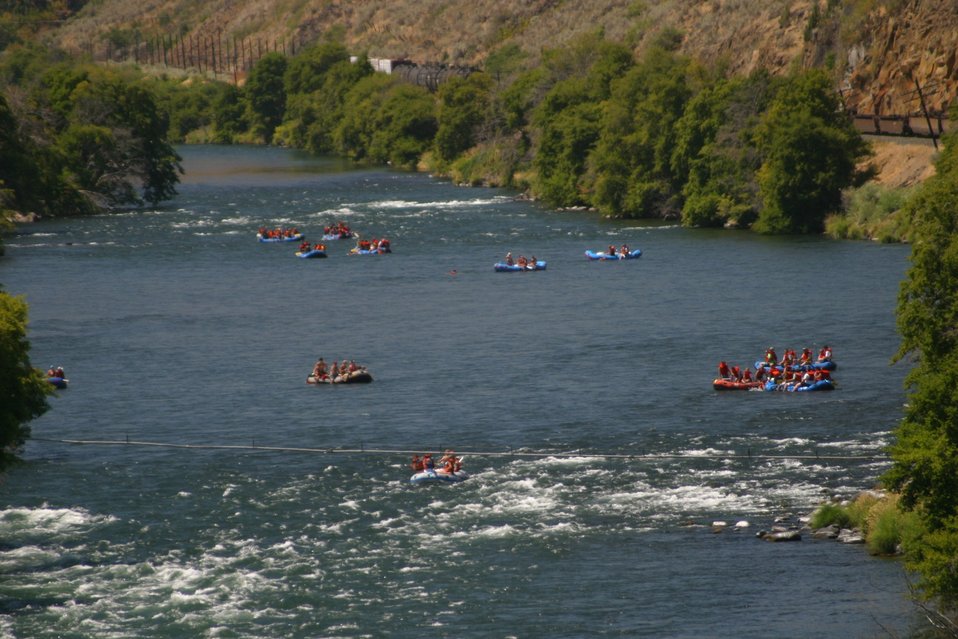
View from the Maupin Bridge looking up stream of the Lower Deschures River.